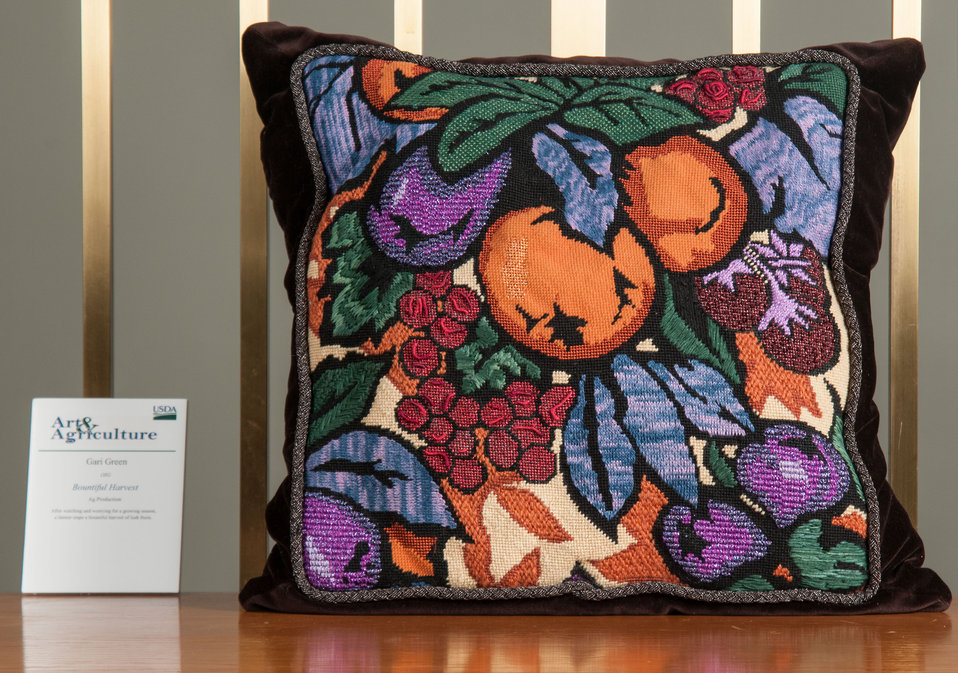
Online Viewer's Choice entries of the 2013 Art & Agriculture, Tuesday, July 9, 2013, in the South Building, Washington, D.C. Themes were expressed by employees from across the department and the contest was open to full-time and part-time USDA employees. Winning artwork will be displayed till the end of the year. U.S. Artistic expression is a creative outlet that is vital for an individual to grow and develop.